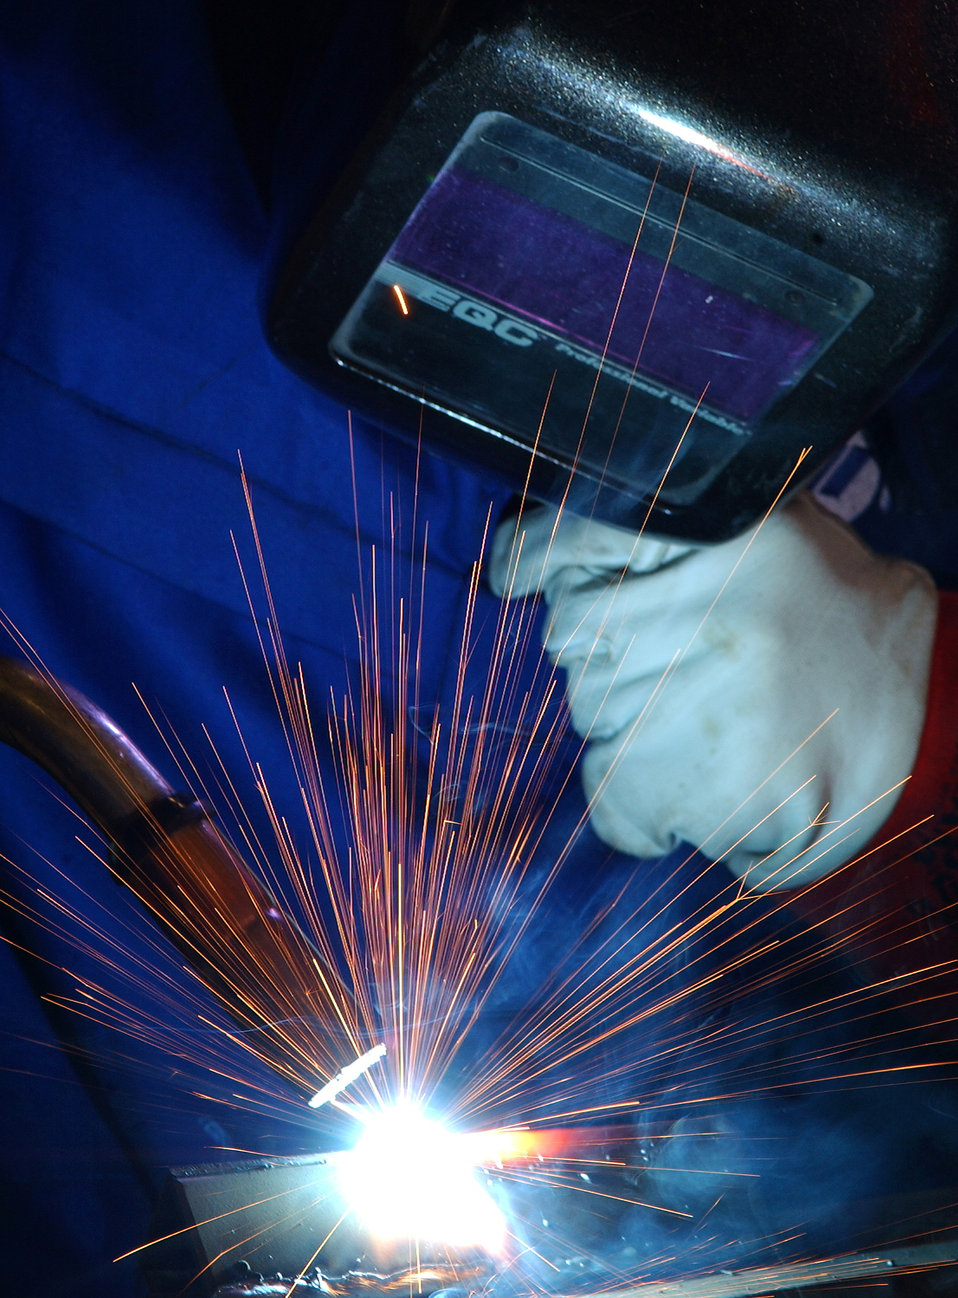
Merger provides Airmen chance to ?weld? new skills

Airmen and local nationals practice tungsten inert gas welding June 4 at Kadena Air Base, Japan. Personnel from vehicle mechanics and body shop are completing a newly implemented welding course at the Pacific Air Forces Transportation Training Center.